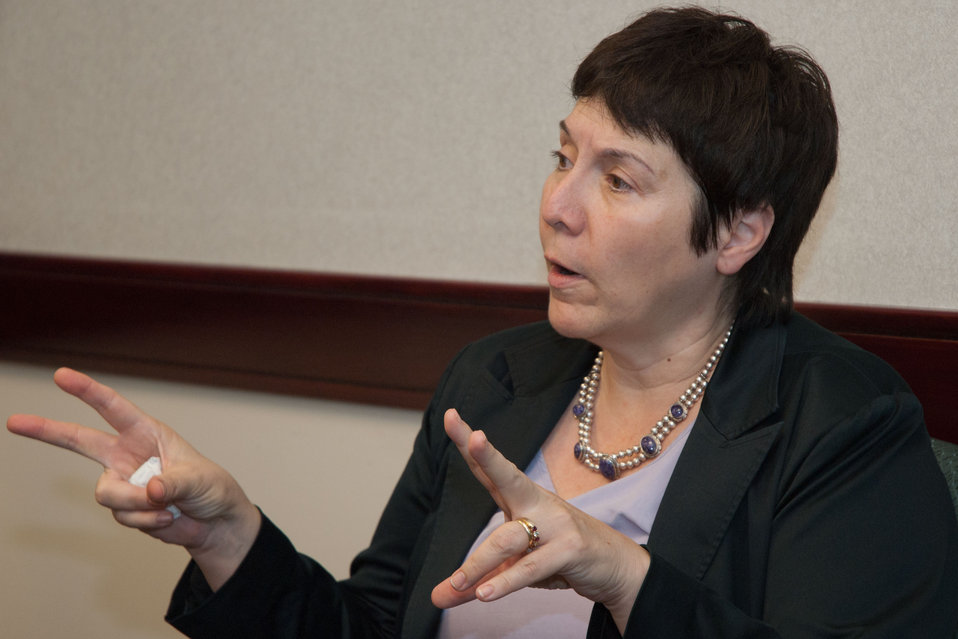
U.S. Department of Agriculture (USDA), Agriculture Research Service (ARS) International Research Programs employee Eileen Herrera, spoke about International Partners: Finding and Achieving Mutual Scientific Objectives with the Afghan Ministry of Agriculture's Borlaug Fellows at the George Washington Carver Center, in Beltsville, MD on Wednesday Sept. 21, 2011.